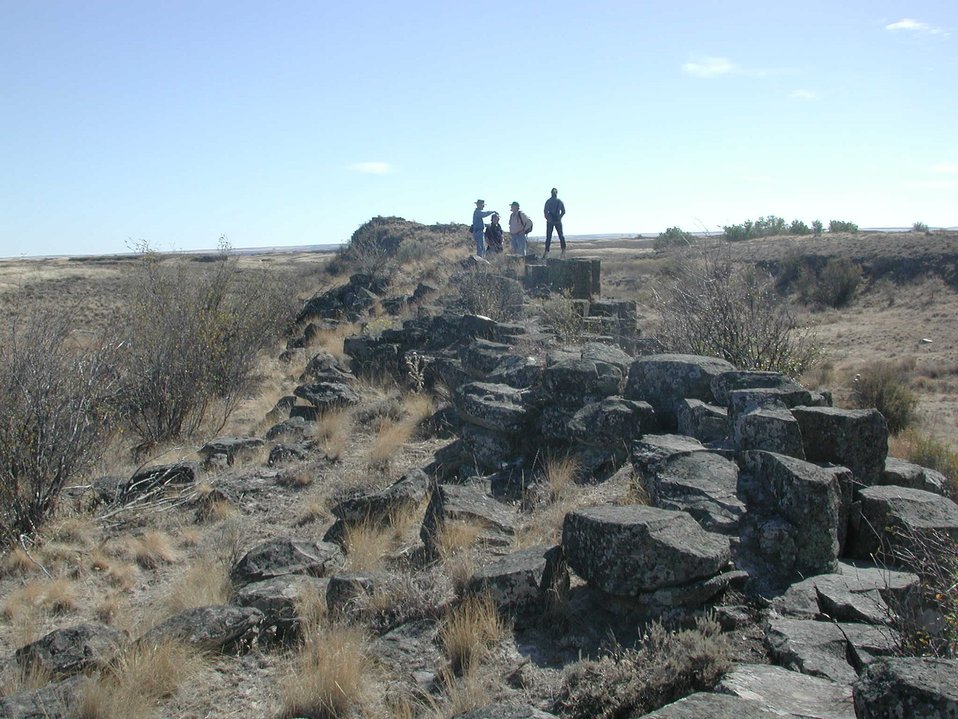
Pulblic Lands Day tour group show the scale of the columnar basalt.